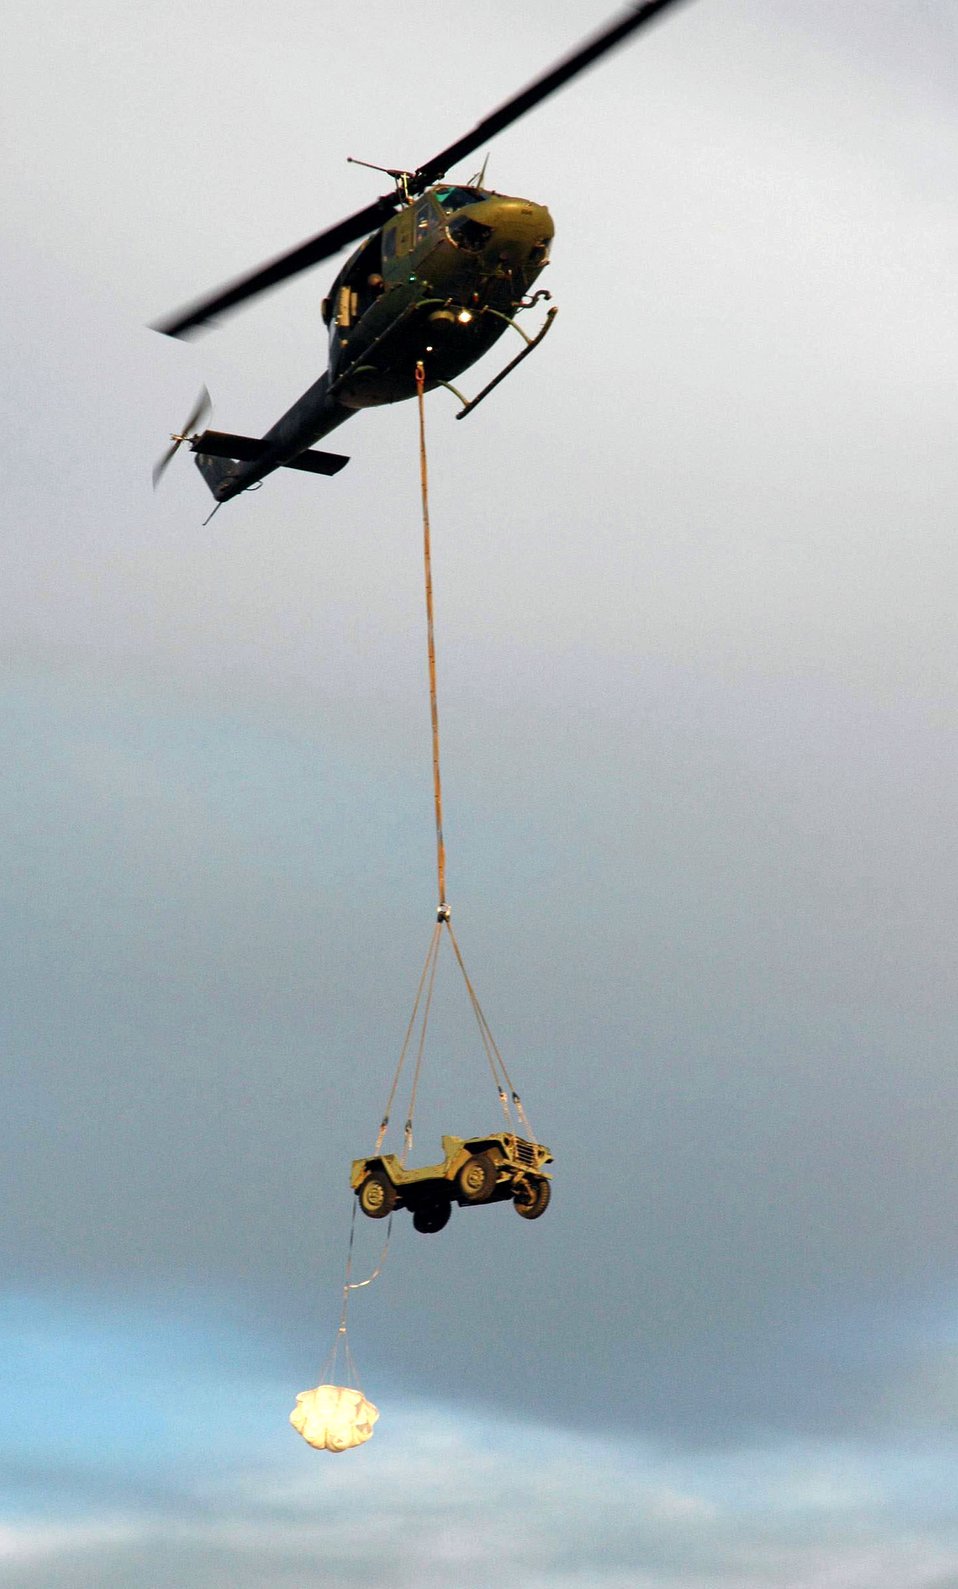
Rescue flight crews provide help from above

A UH-1N Huey assigned to the 36th Rescue Flight cargo slings a Jeep during training near Fairchild Air Force Base, Wash. The 36th Rescue Flight supports the Air Force combat survival school, survival, evasion, resistance and escape specialist training, and supports the National Search and Rescue Plan for some off-base civilian emergencies.